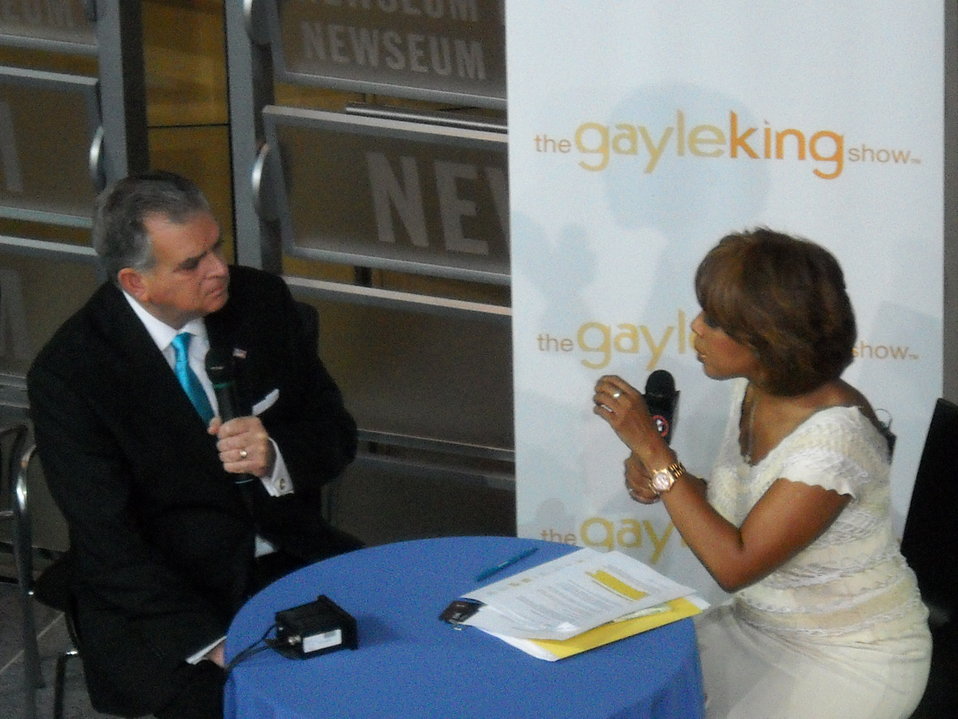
National No Phone Zone Day Newsum Washington, DC April 30, 2010 029